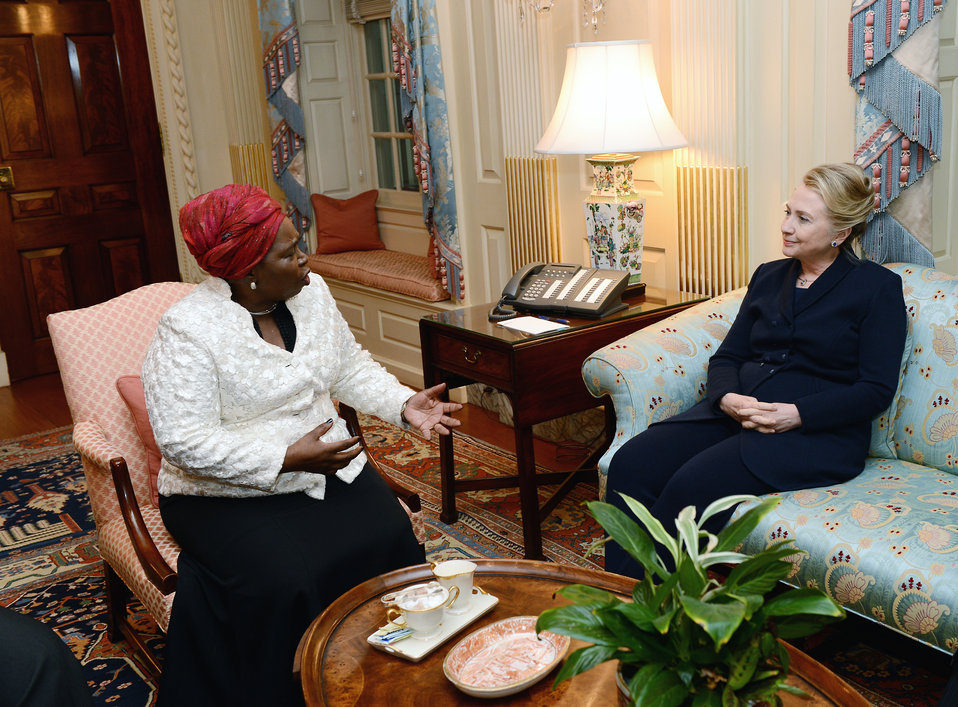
Secretary Clinton Meets With African Union Chairperson Dlamini-Zuma

U.S. Secretary of State Hillary Rodham Clinton meets with African Union Chairperson Nkosazana Dlamini-Zuma at the U.S. Department of State in Washington, D.C., November 28, 2012.